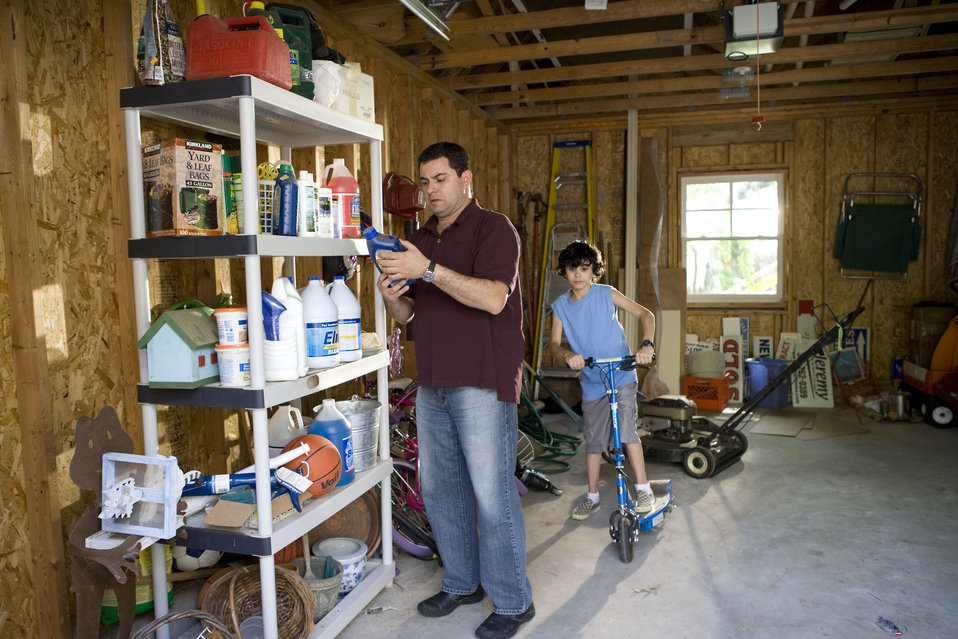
Here we see a father organizing his garage contents, while his son was about to embark on a scooter ride.